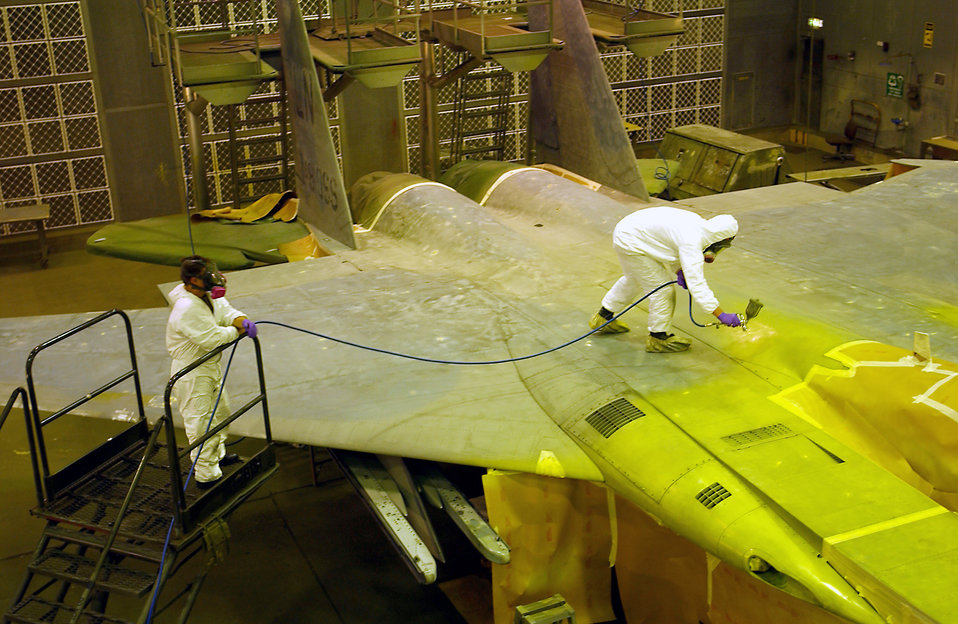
Fresh paint

ROYAL AIR FORCE LAKENHEATH, England -- Airman 1st Class Matt Delmonte airbrushes a new coat of primer onto an F-15 Eagle which will prevent aircraft metals from corroding. Airman Delmonte is an aircraft structural maintainer with the 48th Equipment Maintenance Squadron.